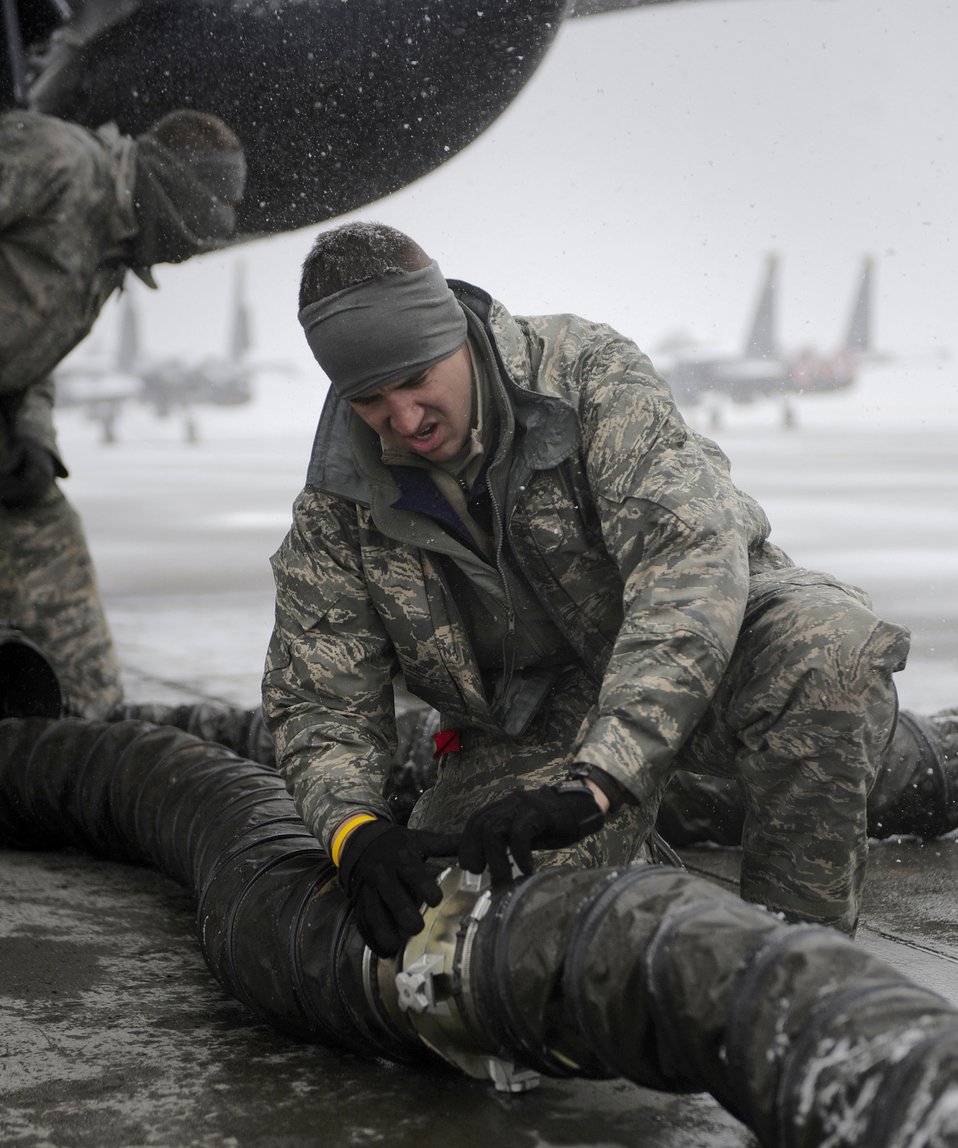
Airmen work under harsh weather conditions

Senior Airman Joseph Dotson disconnects a hose during an exercise Nov. 21, 2010, on the flightline at Mountain Home Air Force Base, Idaho. Wing officials use operational readiness exercises to gauge the wing's ability to meet wartime taskings at a deployed location. The evaluation includes initial response, readiness, combat operations, ability to survive and operate, self aid and buddy care, and mission support. Airman Dotson is assigned to the 391st Fighter Squadron as a crew chief.